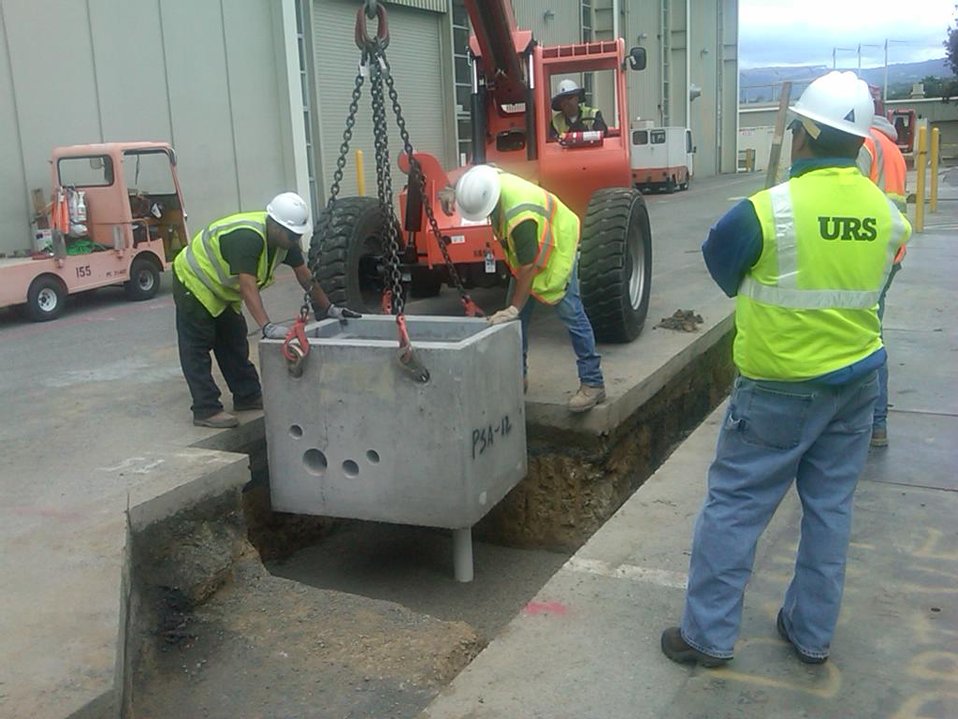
Recovery Act Supports Soil and Debris Cleanup, Groundwater Treatment at SLAC

Recovery Act workers are on track to remove more than 30,000 cubic yards of contaminated soil and debris at the SLAC National Accelerator Laboratory by September 2011.
The Recovery Act invested $14.3 million in legacy cleanup activities at SLAC. In addition to removing contaminated soil and debris that is shipped to local disposal facilities, Recovery Act workers installed three new groundwater treatment systems.